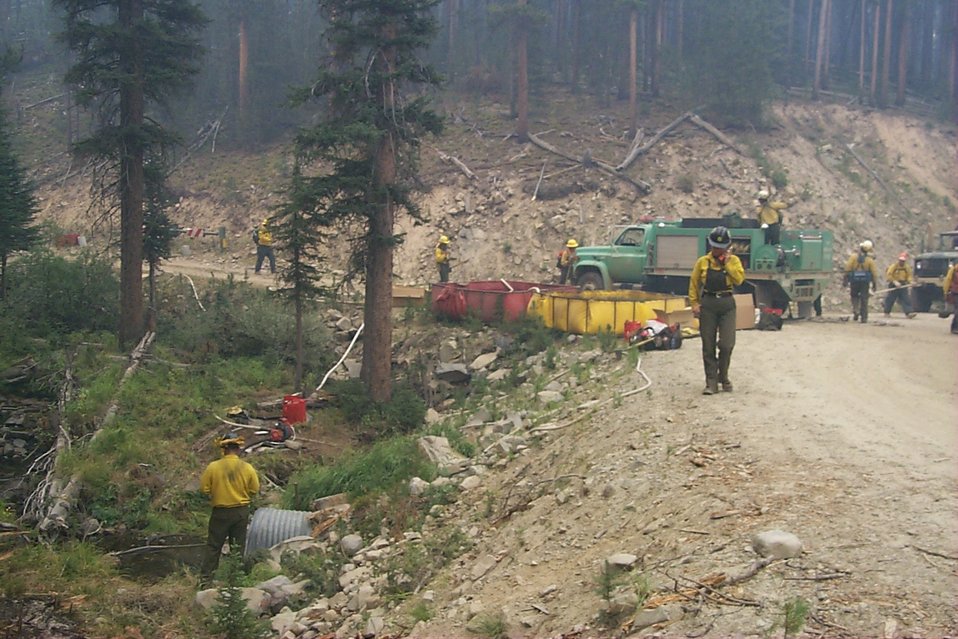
Field water storage Fire Clearwater Fire Salmon Field Office USRD Upper Snake River District